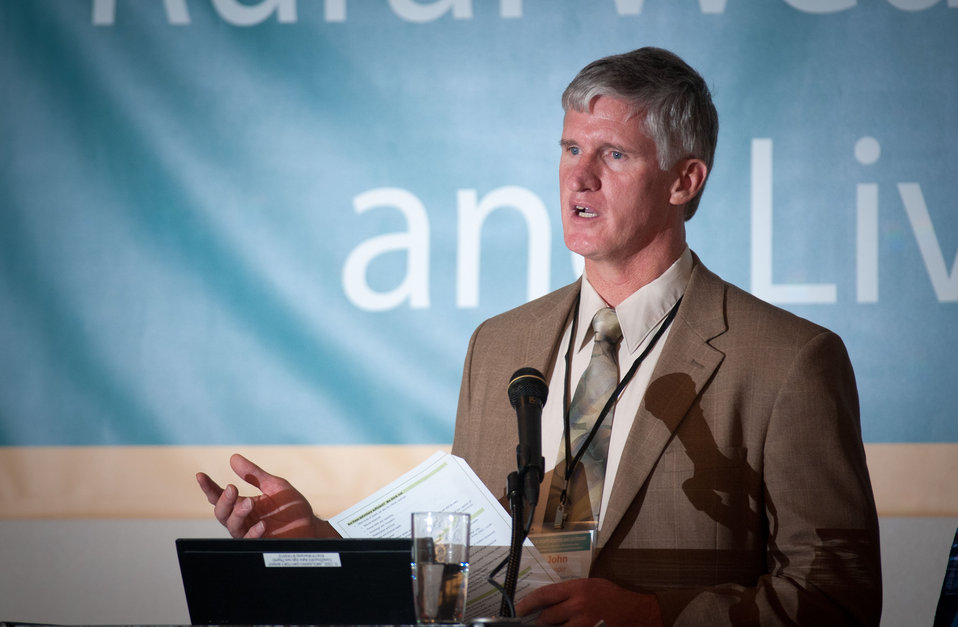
U.S. Department of Agriculture (USDA) Economic Research Service Senior Economist John Pender was a speaking at the Rural Wealth Creation and Livelihoods national conference for practitioners, researchers and policymakers, held at the Dupont Hotel, Washington DC, on Monday October 3, 2011. USDA partnered with the Ford Foundation to sponsor the conference.